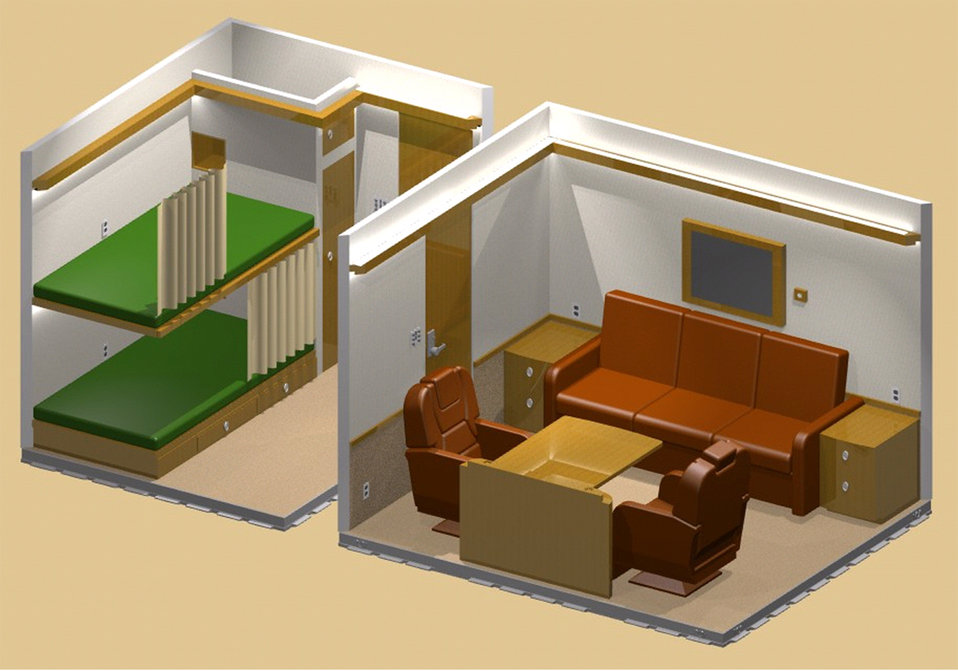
Air Force officials buy 'offices in the air'

Air Force officials are purchasing removable mobile command workspaces for use by military and senior civilian leaders who must use military aircraft for travel. Shown here is an illustration of the Senior Leaders In-transit Conference Capsule that will fit in C-130s as well as C-17s and KC-10s.